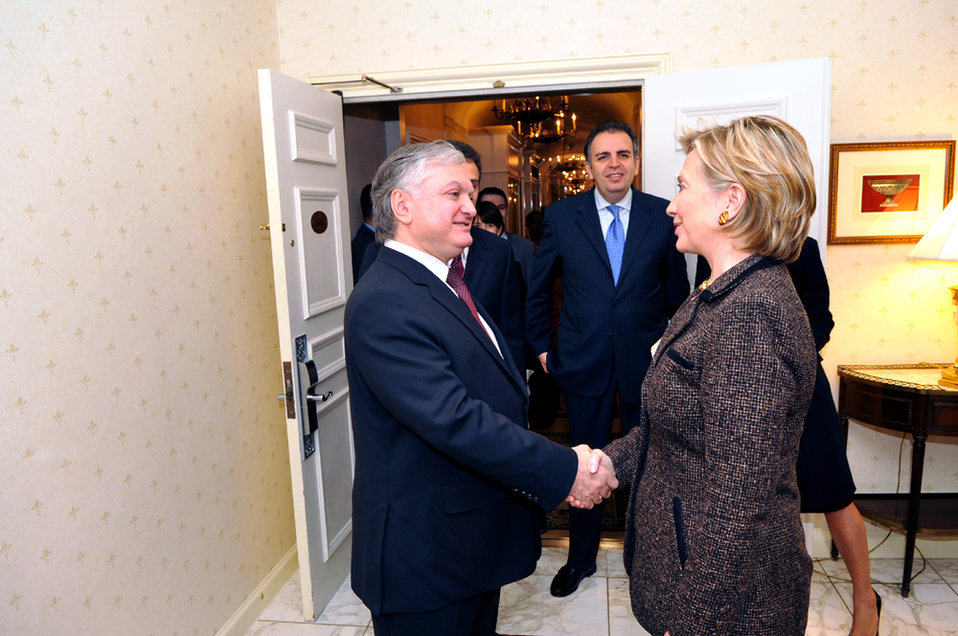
UNGA 2009: Secretary Clinton Meets With Armenian Foreign Minister

U.S. Secretary of State Hillary Rodham Clinton meets with Armenian Foreign Minister H.E. Edward Nalbandian at the Waldorf Astoria hotel in New York City, New York September 28, 2009.